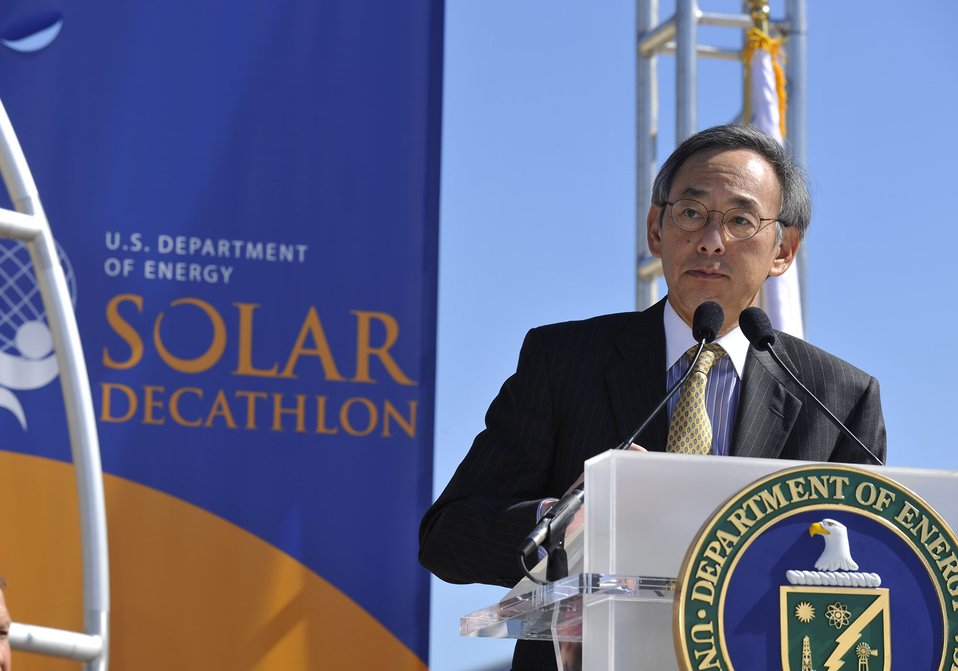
Solar Decathlon 2009 on the National Mall, with Sec. Chu

Solar Decathlon 09